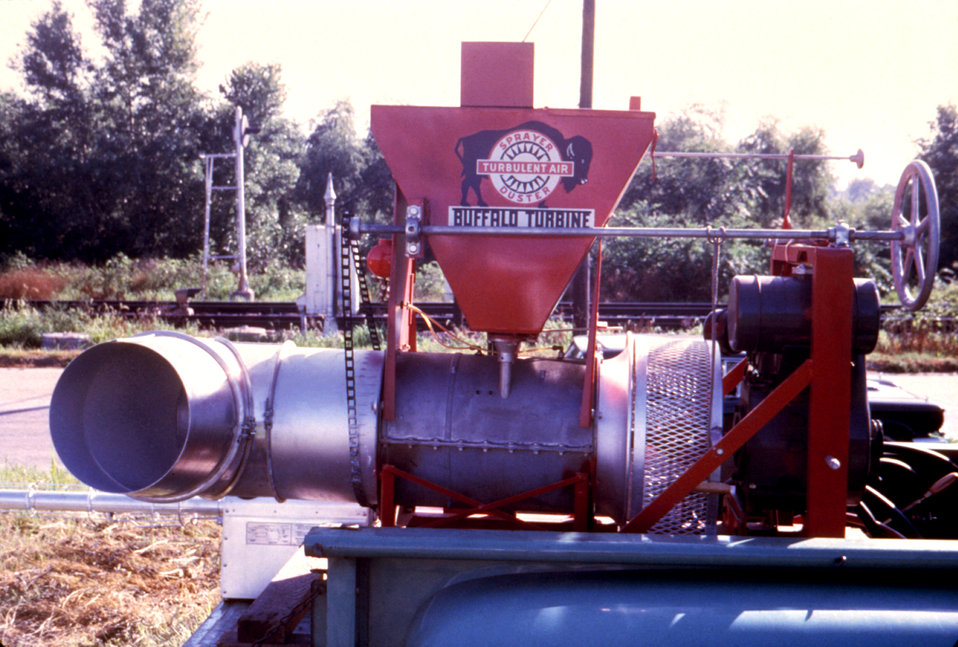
This 1981 photograph depicts a Buffalo Turbine Sprayer/Duster, which was used to distribute powdered insecticides outdoors, primarily amongst agricultural crops in order to control arthropodal pests.